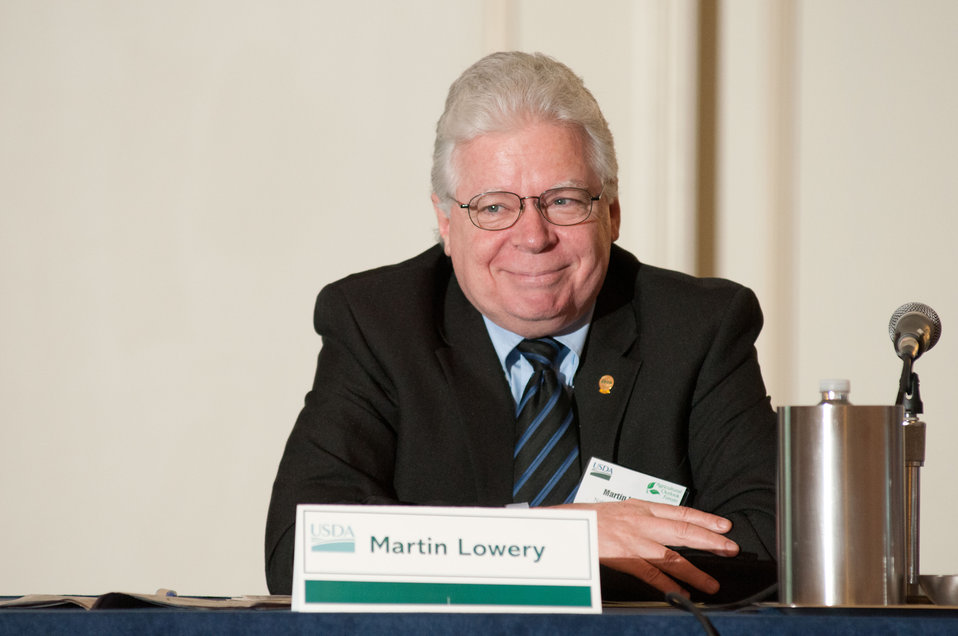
National Rural Electric Cooperative Association Chief Operating Officer Martin Lowery, Arlington, Virginia, speaks on the topic Looking Ahead: What Can Rural Areas Expect From a New Rule to Finance Energy Efficiency, during the Energizing Rural Economies breakout session of the U.S. Department of Agriculture (USDA) 2013 Agricultural Outlook Forum held at the Crystal Gateway Marriott Hotel in Arlington, VA on Friday, Feb. 22, 2013. The panel discussed the expanding capital available for rural investments that helps deliver the tools and technologies to meet energy, telecommunications, and business needs to help the rural economy to grow. Rural Development programs and services can help rural consumers increase productivity, efficiency, and innovation, which can expand domestic an foreign markets, reduce costs, and help diversify and strengthen rural economies.